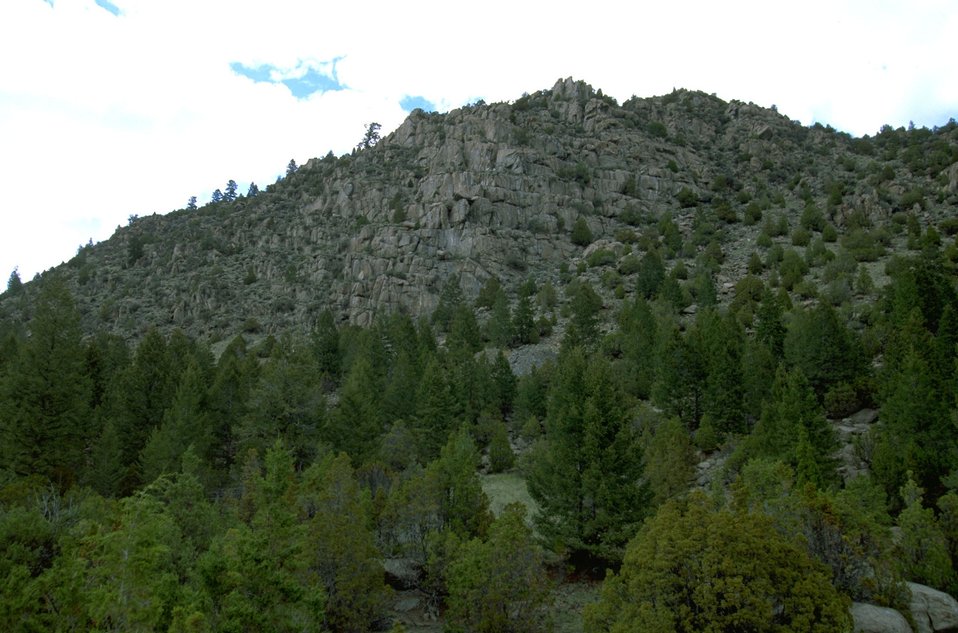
Rock-formation hillside in the Pipestone Hills area